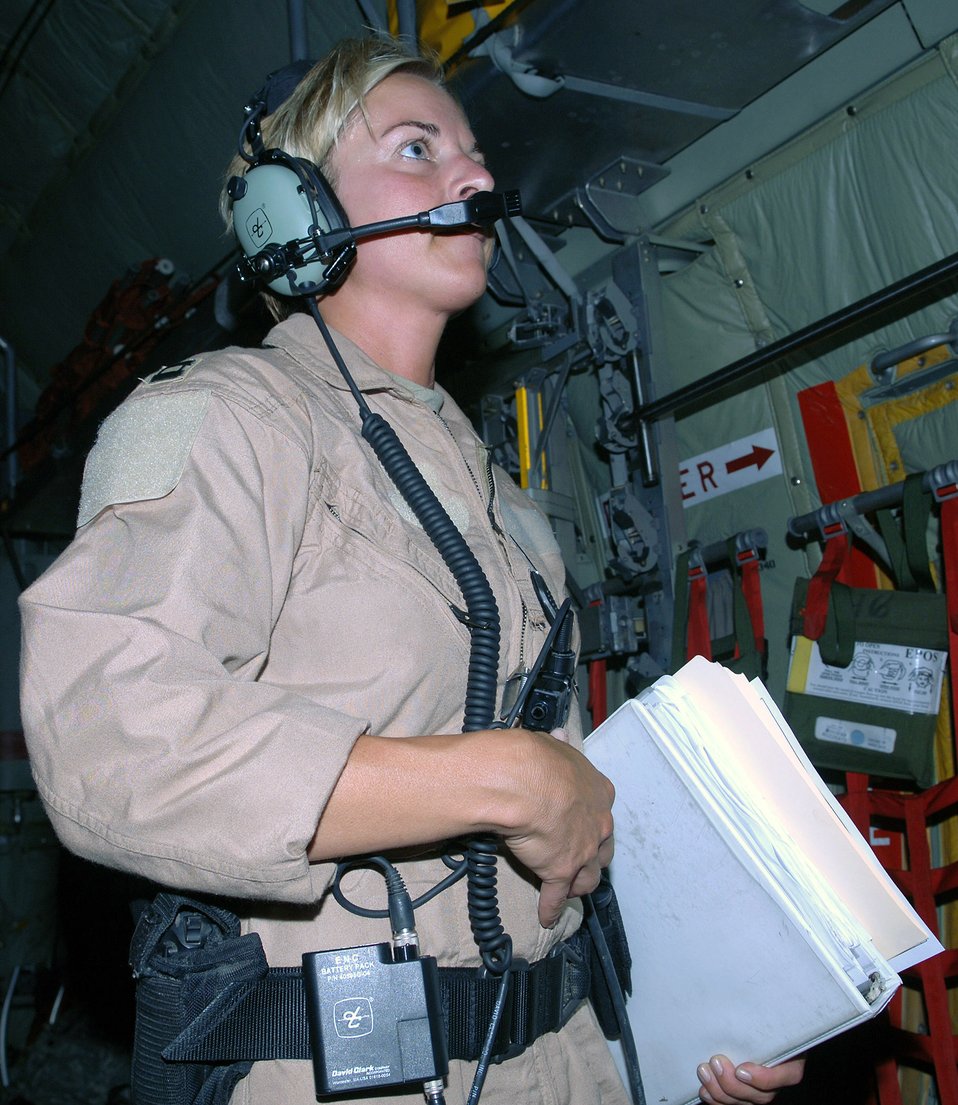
Aeromedical evacuation teams ready to help anytime

Capt. Michelle Mulberry, 455th Expeditionary Aeromedical Evacuation Flight nurse, speaks to the C-130 aircrew prior to receiving patients on an aeromedical evacuation mission from Bagram Airfield, Afghanistan. Capt. Mulberry is deployed from the Wyoming Air National Guard's 187th Aeromedical Evacuation Squadron, Cheyenne, Wyo.